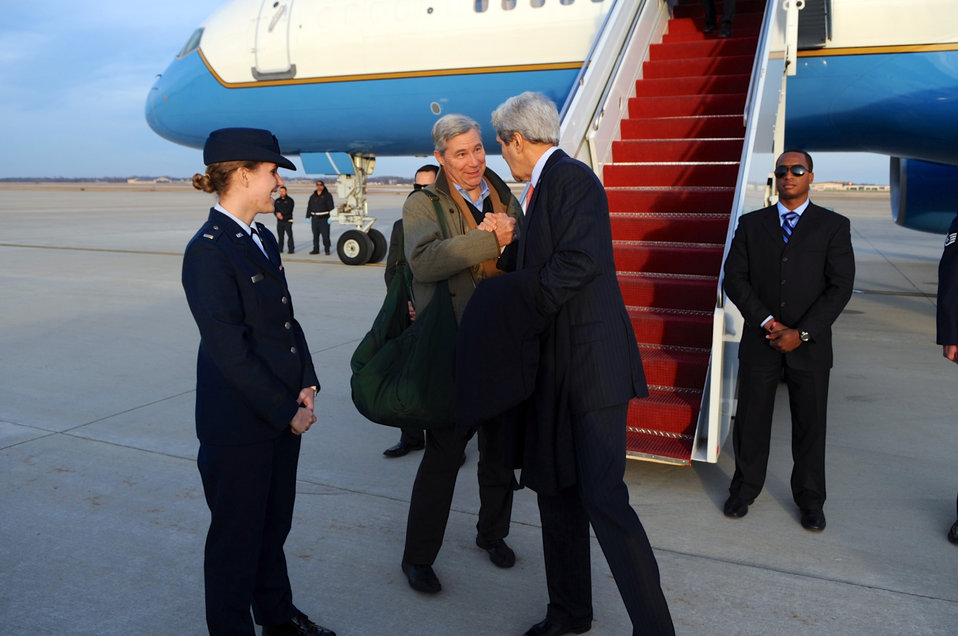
Secretary Kerry Bids Goodbye to Senator Whitehouse After Completing Final Trip of First Year in Office

U.S. Secretary of State John Kerry says goodbye to U.S. Senator Sheldon Whitehouse of Rhode Island on February 2, 2014, after he hitched a ride on the Secretary's airplane on the flight back to Andrews Air Force Base from the Munich Security Conference in Munich, Germany. The trip was the final one of Kerry's first year in office, during which time he spoke domestically, visited all major State Department agencies, and traveled across 327,000 miles to engage in diplomacy in 39 countries.